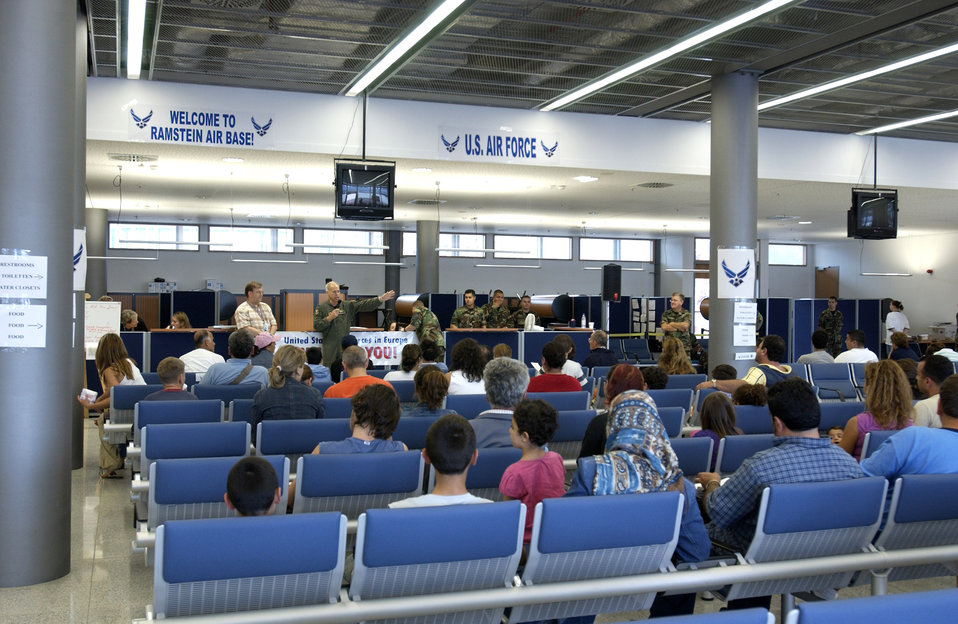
Heading to America

Departees from Lebanon are briefed by Col. Glen Apgar at the passenger terminal on Ramstein Air Base, Germany on July 23. Airmen at Ramstein provided humanitarian assistance for American citizens departing the Lebanon crisis on their way to the United States. Colonel Apgar is vice commander of the 86th Airlift Wing.